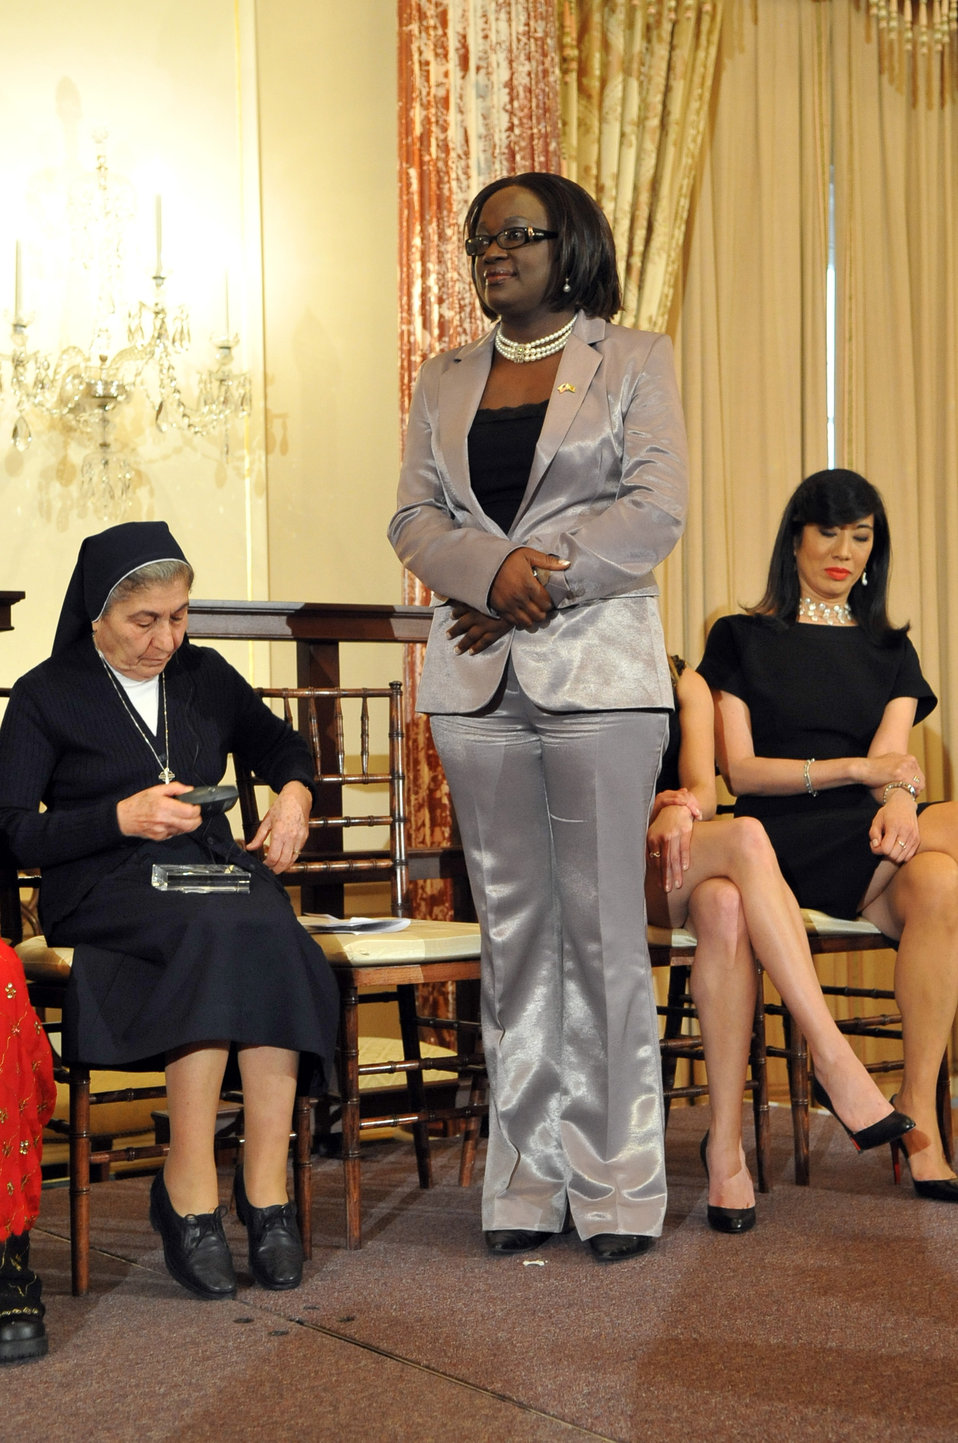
Honoree Jestina Mukoko of Zimbabwe stands as she is recognized at the 2010 International Women of Courage Awards at the U.S. Department of State, Washington, D.C. March 10, 2010.